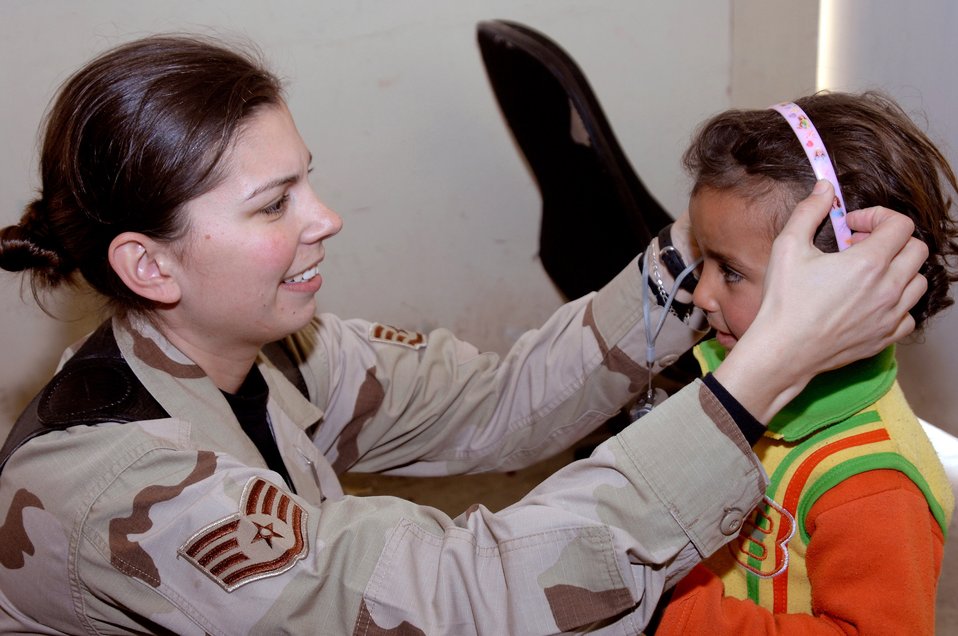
How do I look?

Staff Sgt. Aileen Pule helps adjust the hair band on an Iraqi girl Jan. 16 at the Civilian Military Operations Center near Baghdad, Iraq,. Iraqi citizens receive medical attention from U.S. military doctors and the children receive toys, clothing and school supplies donated by Americans.